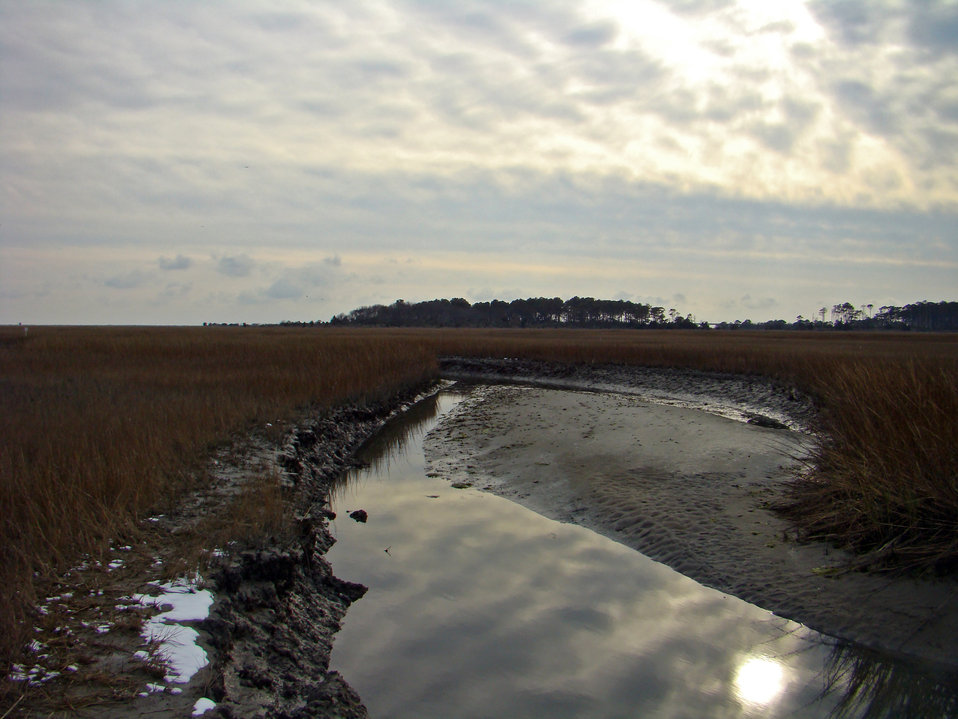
Salt marsh

Eastern Shore of Virginia National Wildlife Refuge, VA.